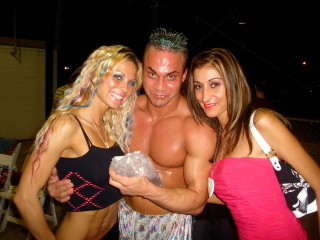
Camey Mallette, Teddy Hart and his girlfriend Nikki at a UXW wrestling event in Orlando Florida.